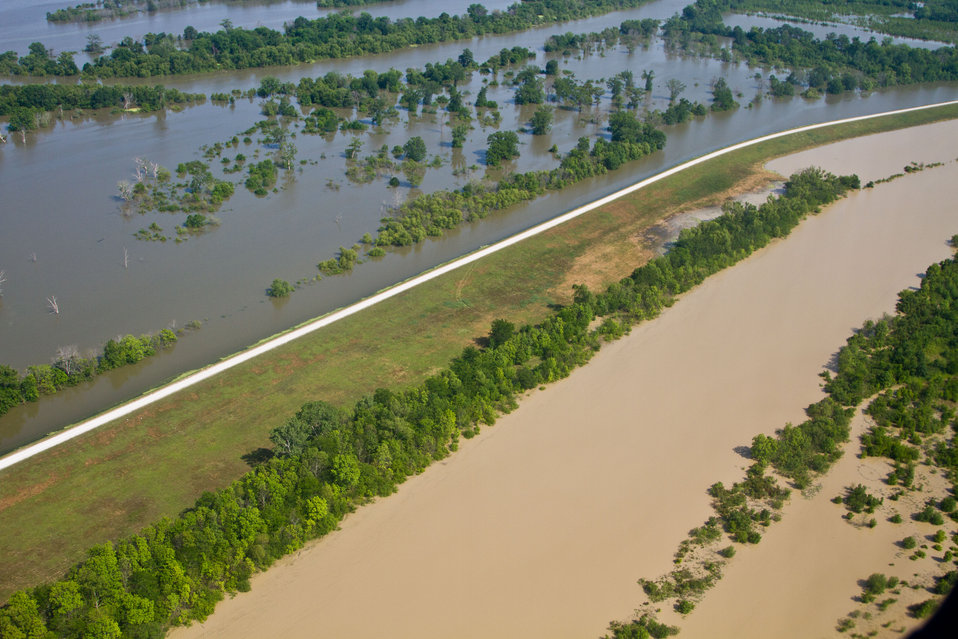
Aerial view of Mississippi River flood of farms, wilderness, and populated areas, on Thursday, May 19, 2011. from the MS side. Aerial platform was a UH-60 Blackhawk commanded by Col. Kennedy and his flight crew from the Army Aviation Support Facility #1 at Hawkins Field in Jackson, MS.